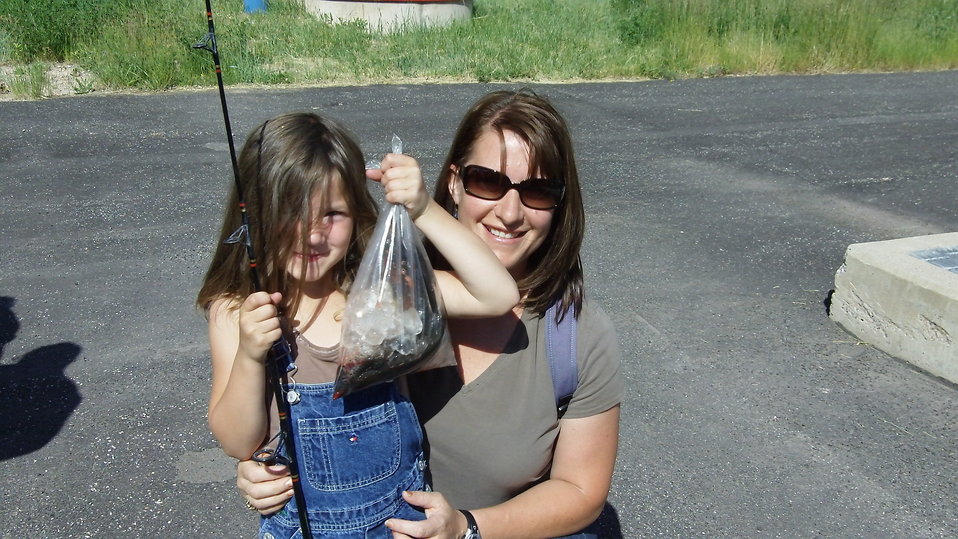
Mom and Daughter Participate in Fishing Day

On June 11, 2011, Jones Holes National Fish Hatchery held its annual Kids Free Fishing Day. Families came to enjoy the great outdoors and had a chance to tour the hatchery, feed and catch fish. Utah Division of Wildlife Resources also help in the event.